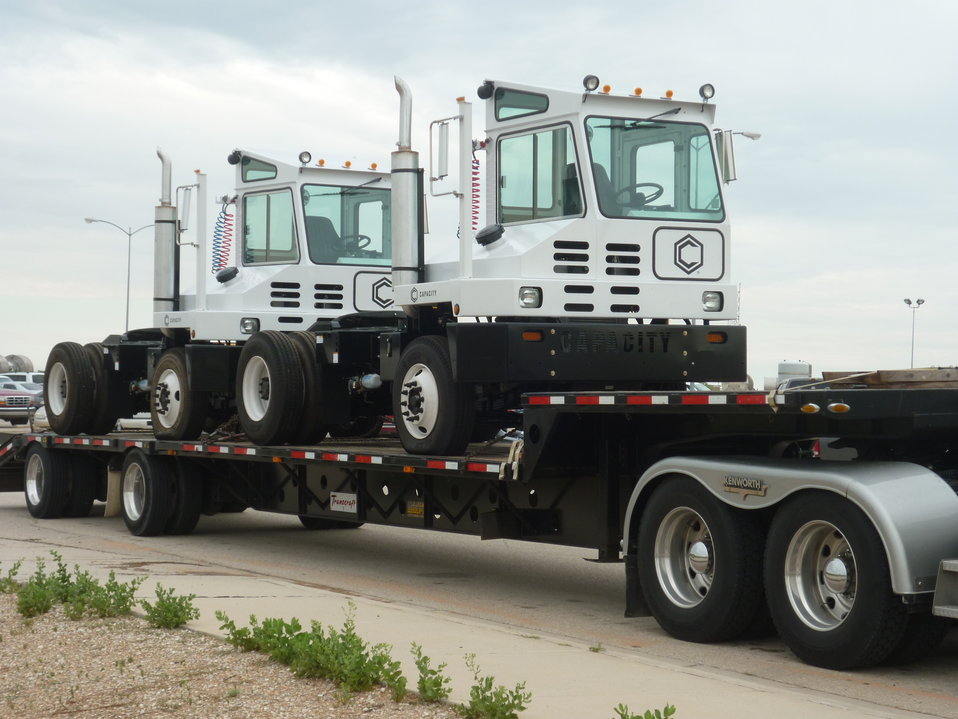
Recovery Act Accelerates Transuranic Waste Disposal Across DOE Complex

The Recovery Act funded the purchase of trailer jockeys for use in WIPP operations.